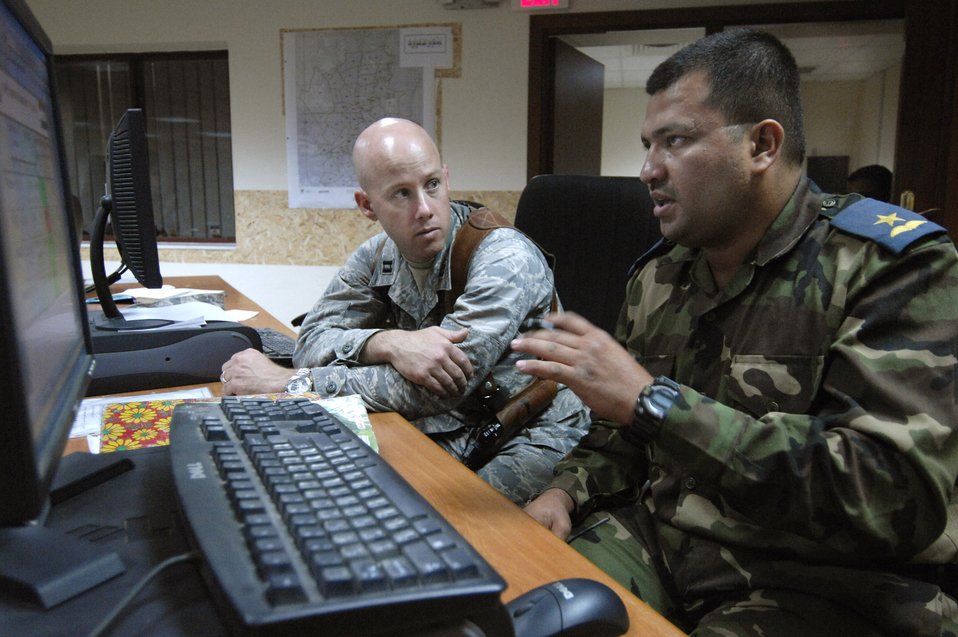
Airmen teach Iraqis Western-style command, control

Capt. Mark Lawson advises an Iraqi air operations center lieutenant about operations center logistics at the Iraqi Air Operations Center at Camp Victory, Iraq, May 28. Captain Lawson is a military transition team member, advising Iraqi logistics officers concerning the day-to-day operations in their air operations center. The Iraqi AOC is run completely by Iraqi military officers and advised by Air Force military transition team officers. The AOC MTT is responsible for teaching and preparing the Iraqi military to take over AOC operations independent from the U.S. military.